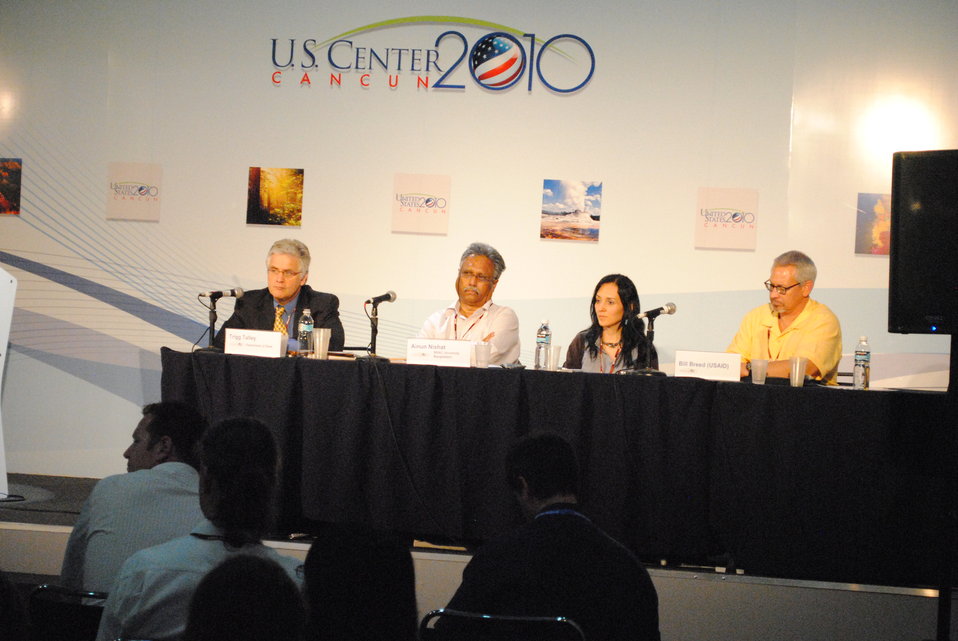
Panelists Respond to Questions

Panelists in the side event, Enhancing Capacity for Low Emission Development Strategies, respond to questions at the U.S. Center at COP-16 in Cancun, Mexico, on December 2, 2010.